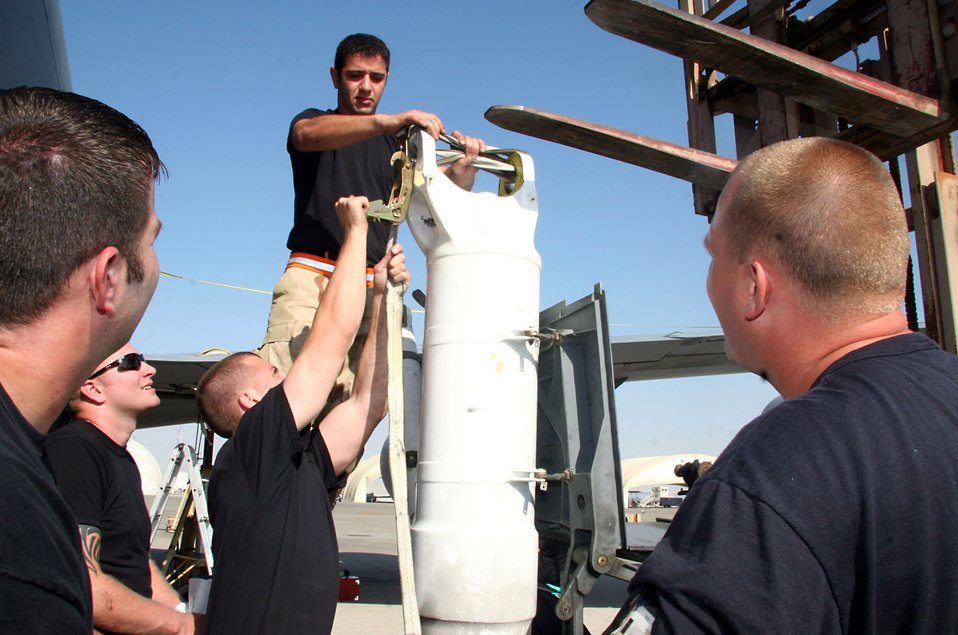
KC-135 strut change

Staff Sgt. Mohammed Abouhesham (top) and Staff Sgt. Brett H. W. Wanner (below) prepare to separate the right main landing gear side strut on a KC-135 Stratotanker Dec. 21. The Airmen are assigned to the 380th Expeditionary Aircraft Maintenance Squadron and deployed from the 22nd Aircraft Maintenance Squadron at McConnell Air Force Base, Kansas.